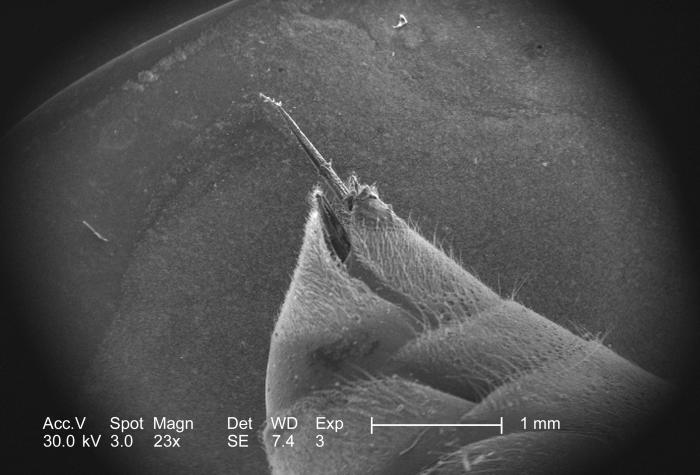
From a superior oblique perspective, and under a low magnification of 23x, this scanning electron micrograph (SEM) depicted some of the ultrastructural morphologic details of the stinger apparatus of an unidentified hymenopteran insect found deceased in the Decatur, Georgia suburbs.The Order of Hymenoptera includes bees, wasps, ants, and sawflies. Judging from the smooth nature of this stinger shaft, this was most likely something other than a honeybee, whose stinger shaft would have displayed more defined, broader barbs at the distal tip. The smoother nature of the shaft, would have allowed the stinger to have been easily extracted without it becoming inextricably embedded when it was penetrating a victim's skin, as is the case with the Western honeybee, Apis mellifera.